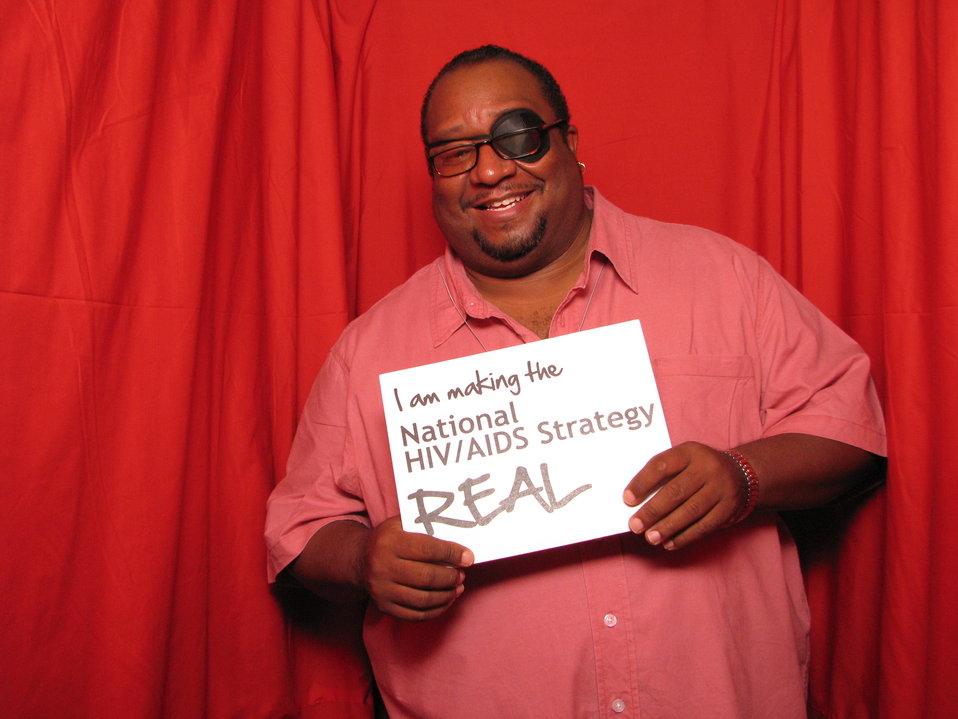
I am making the National HIV/AIDS Strategy REAL

From the AIDS.gov photo booth at the U.S. Conference on AIDS, September 2010 (Orlando, FL).